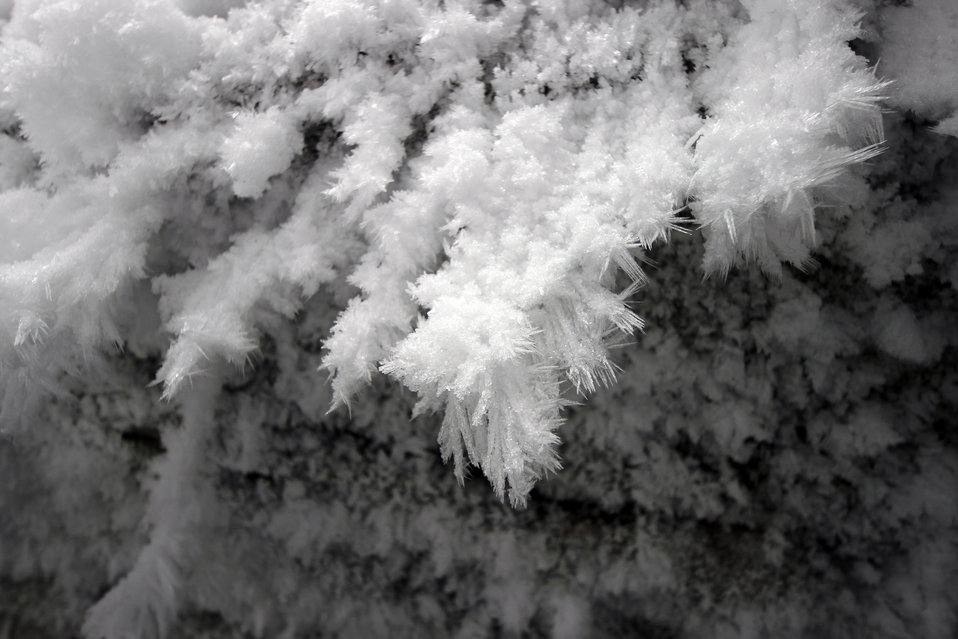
Hoar frost on a river bluff in Michigan.